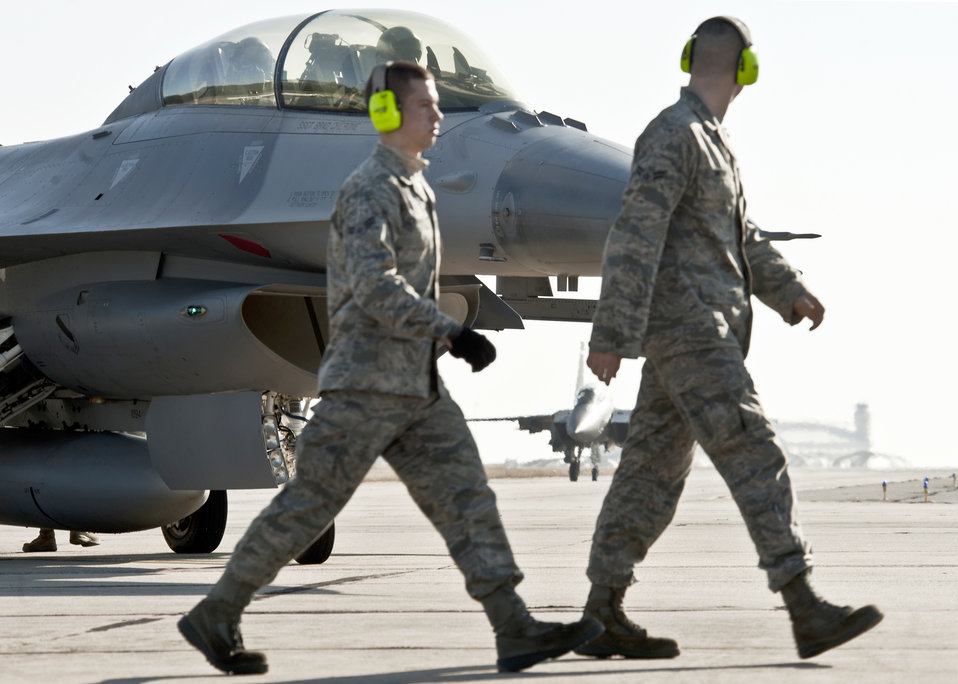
F-15E Strike Eagles get new radar

F-15E Strike Eagle maintainers walk past a parked F-16 Fighting Falcon to move into place as their aircraft taxis toward them for a final check before takeoff Jan. 18, 2011, from Eglin Air Force Base, Fla. This F-15E is equipped with the new APG-82 radar, which replaces the 24-year-old APG-70 radar system. Maintainers are assigned to the 46th Maintenance Group.